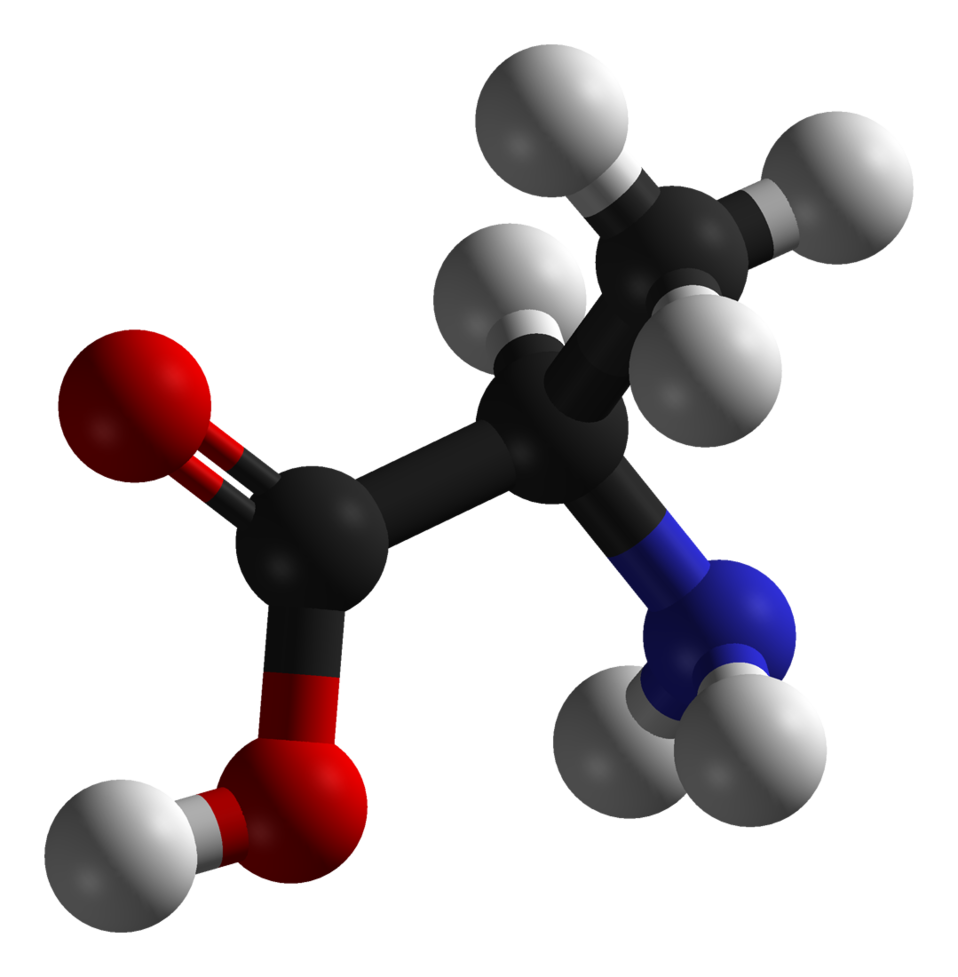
D-alanine-3D-balls